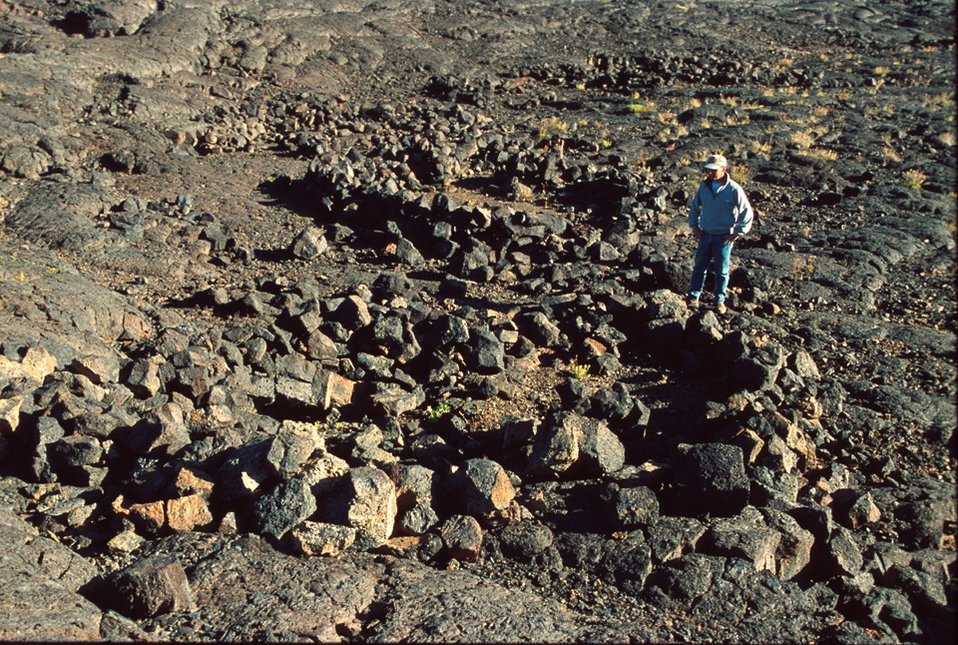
Craters of the Moon National Monument Shoshone Field Office USRD Upper Snake River District